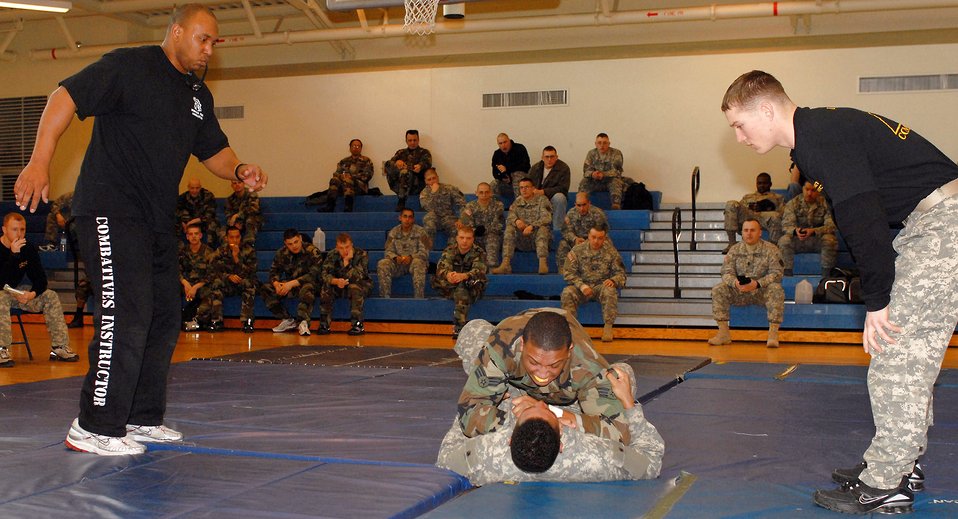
Airmen, Soldiers fight

Senior Airman Tesfaya Campbell and Army Pfc. Grayson Damon engage in hand-to-hand combat Feb. 14 at Kunsan Air Base, South Korea. This training is part of the Army warrior ethos. The training is now offered to Airmen here to enhance mission effectiveness between the two services. Air Force officials are currently working on a service specific hand-to-hand combat training for all Airmen. Currently, the Air Force's Officer Training School has implemented a new close-combat course into its curriculum. Airman Campbell is assigned to the 8th Security Forces Squadron and Private Damon is assigned to the 144th Charlie Company Air and Missile Defense unit.